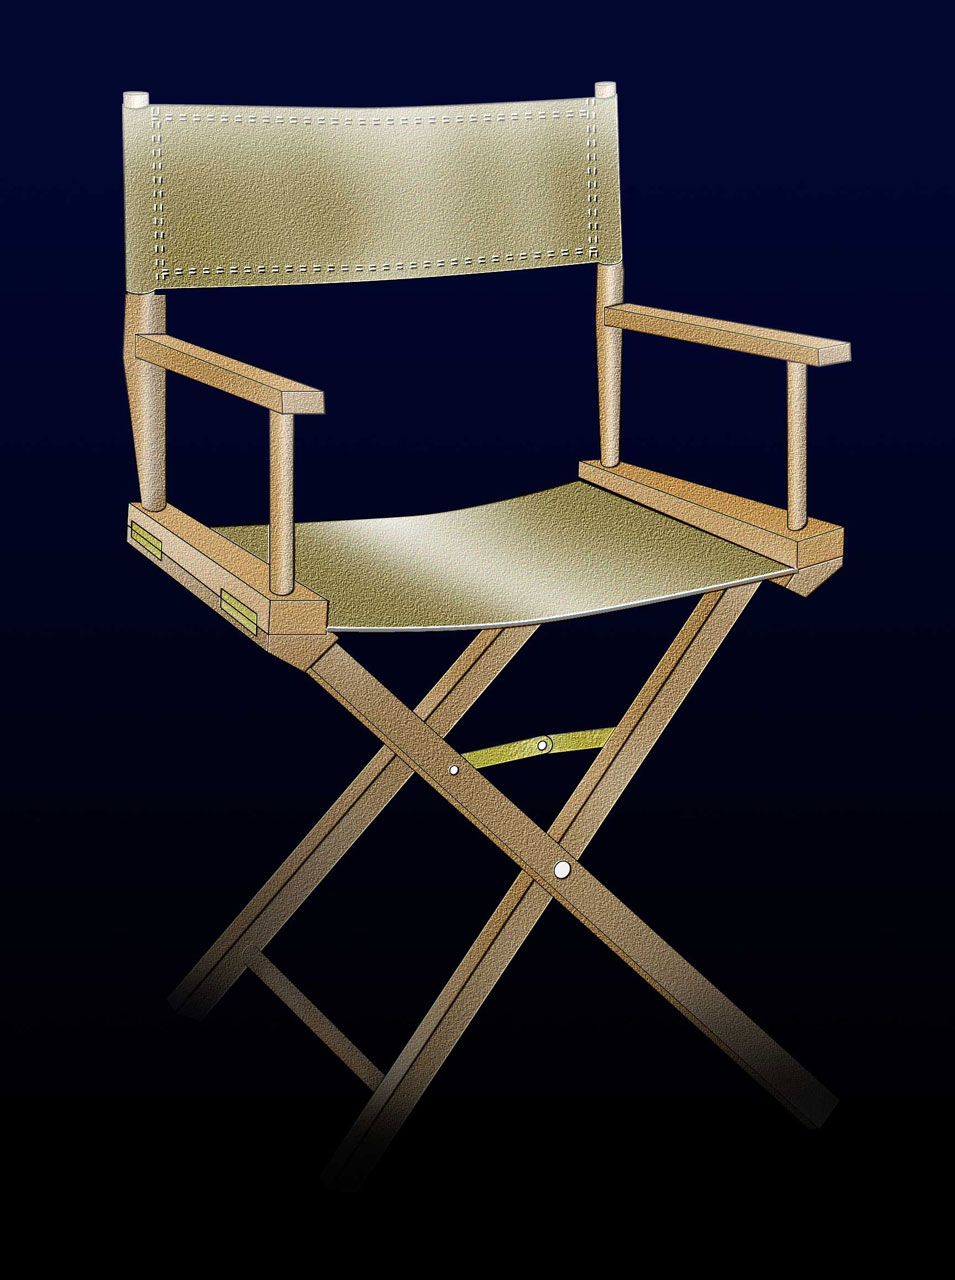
Folding directors chairs

I started drawing a simple directors chair image for my website imageopia and got carried away..